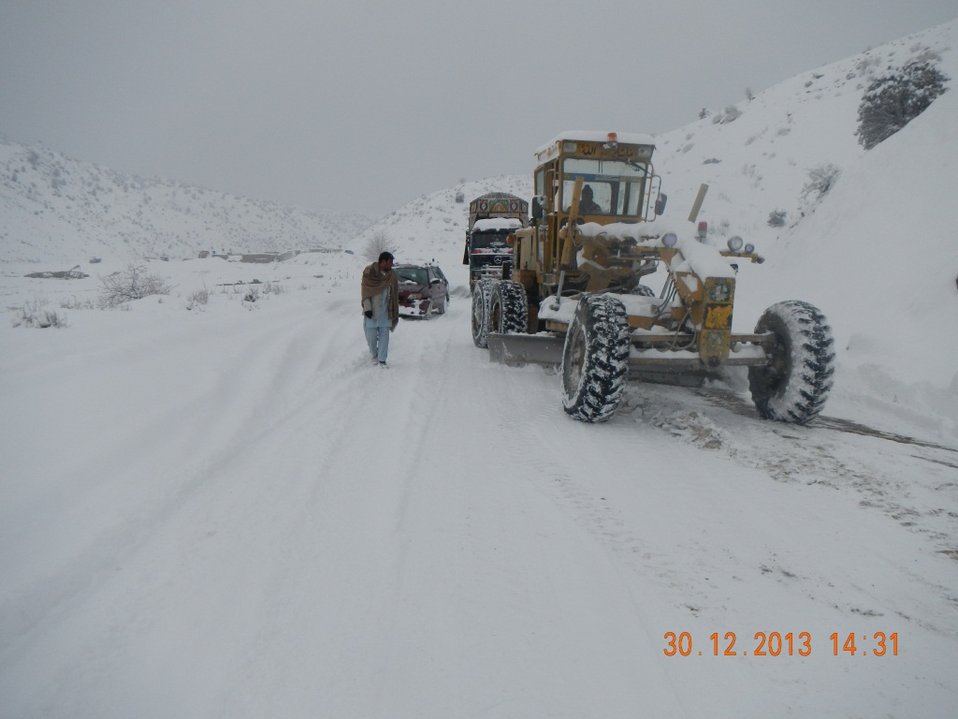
Snow removal work on the Gardez Khost road